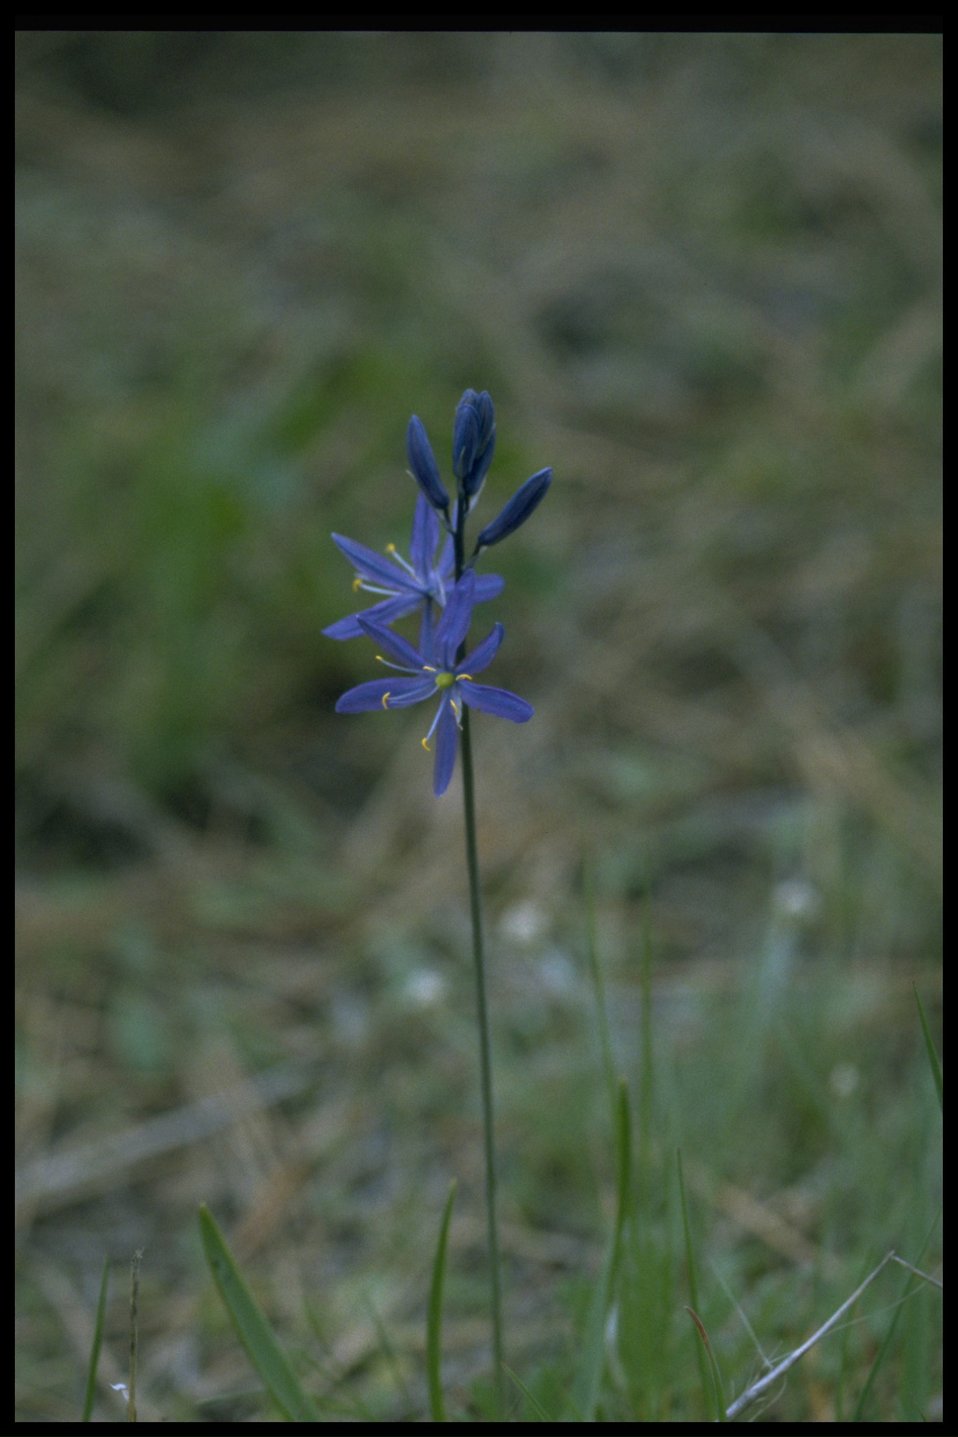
Medium shot of small camas (Camassia quamash).